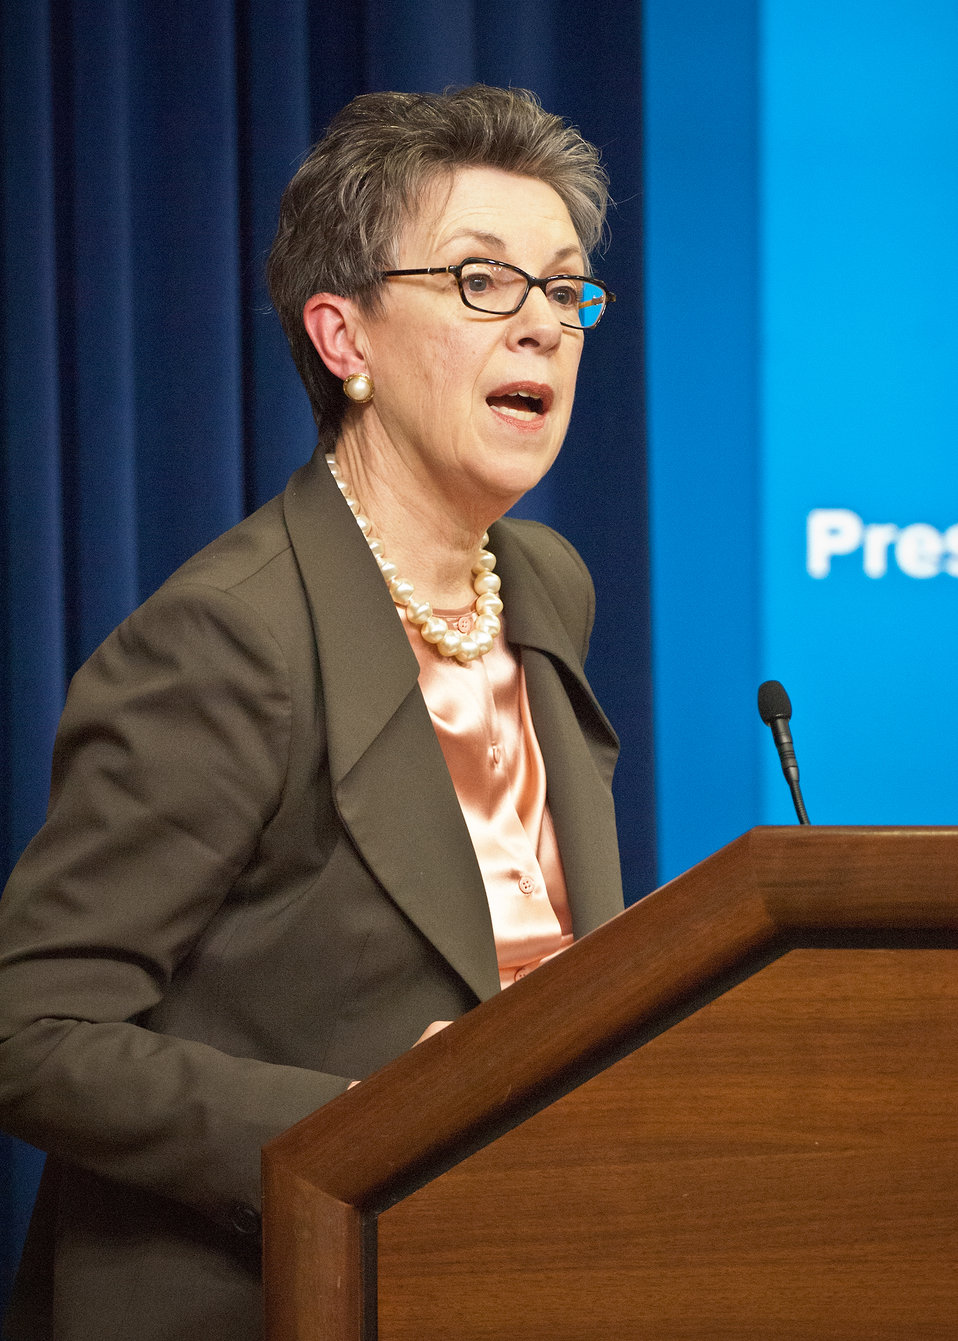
Dr. Catherine Woteki, Chief Scientist, Undersecretary, Research Education and Economics discussed the challenge meeting the food and agriculture needs of the future at the 11th Annual Meeting of State Agriculture and Rural Leaders at the Eisenhower Executive Office Building in Washington, D.C., on Friday, January 6, 2012.